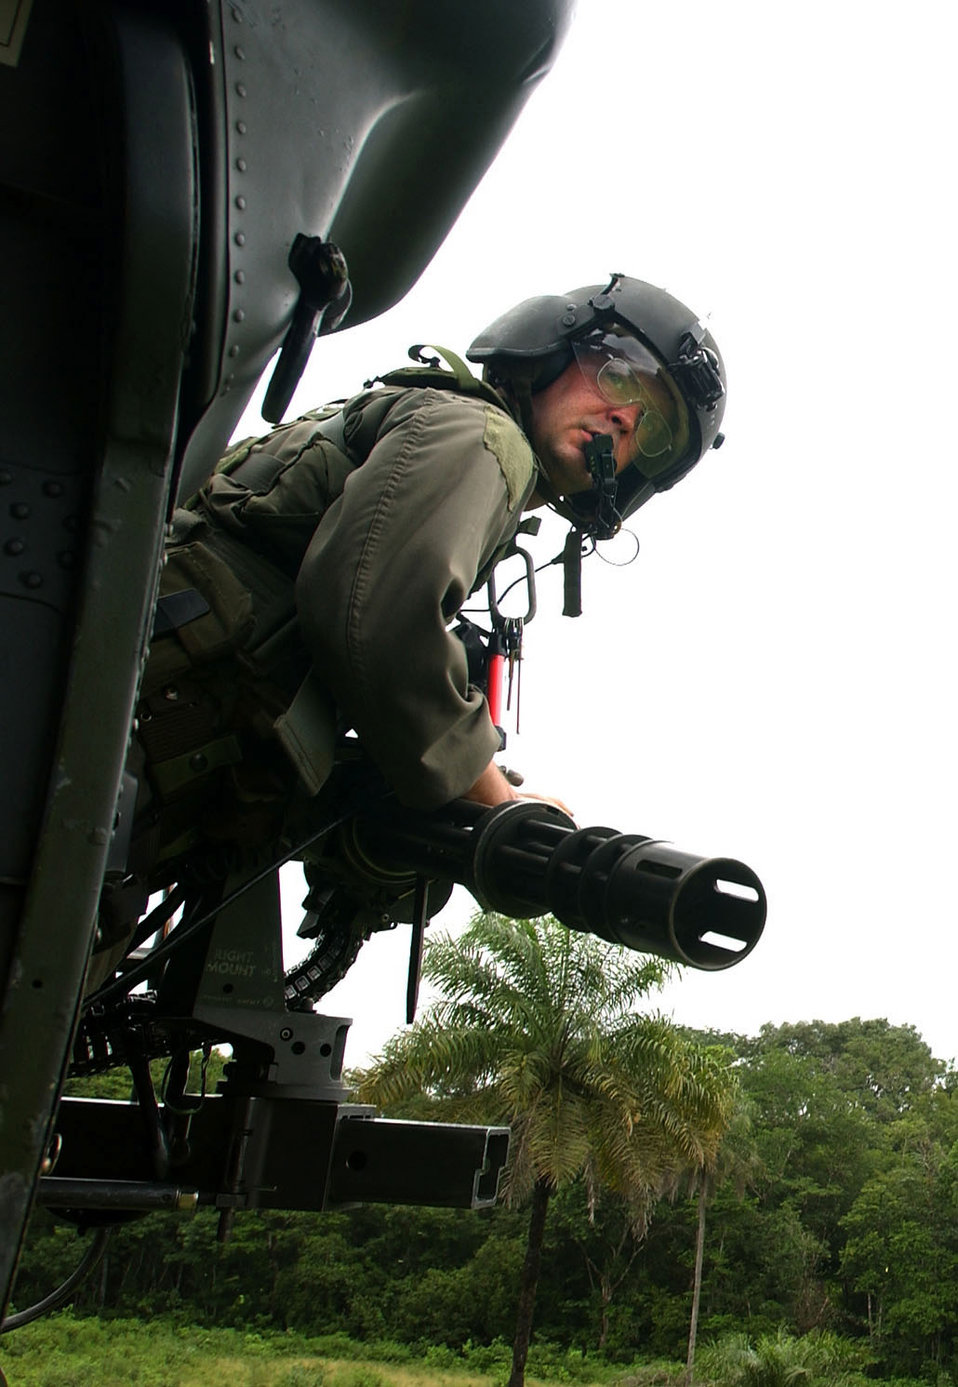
Clear to land

OVER SIERRA LEONE -- Staff Sgt. Joey Bishop, a flight engineer, scans for obstacles as an HH-60G Pave Hawk prepares to land during a training mission Aug. 10. Snyder is from the 56th Rescue Squadron from Naval Air Station Keflavik, Iceland, and is currently serving with the 398th Air Expeditionary Group. The group is providing personnel recovery and emergency evacuation capability for the Humanitarian Assistance Survey Team and the Fleet Antiterrorism Security Team in Liberia.